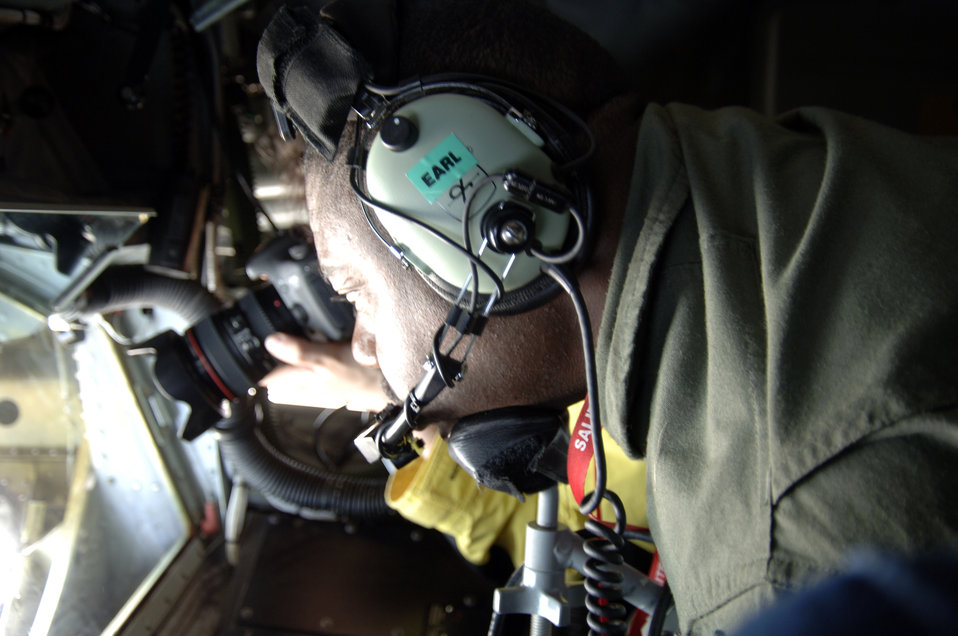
Tanker aircrews support exercise in Chile

Master Sgt. Vince Jones refuels a Chilean F-16 from a KC-135 Stratotanker during a refueling mission Oct. 22, 2009, over Chile. The Chilean air force hosted military members from the United States, Brazil, Argentina and France during Exercise Salitre II, a multinational exercise focused on interoperability. Sergeant Jones is a 161st Air Refueling Wing boom operator with the Arizona Air National Guard.